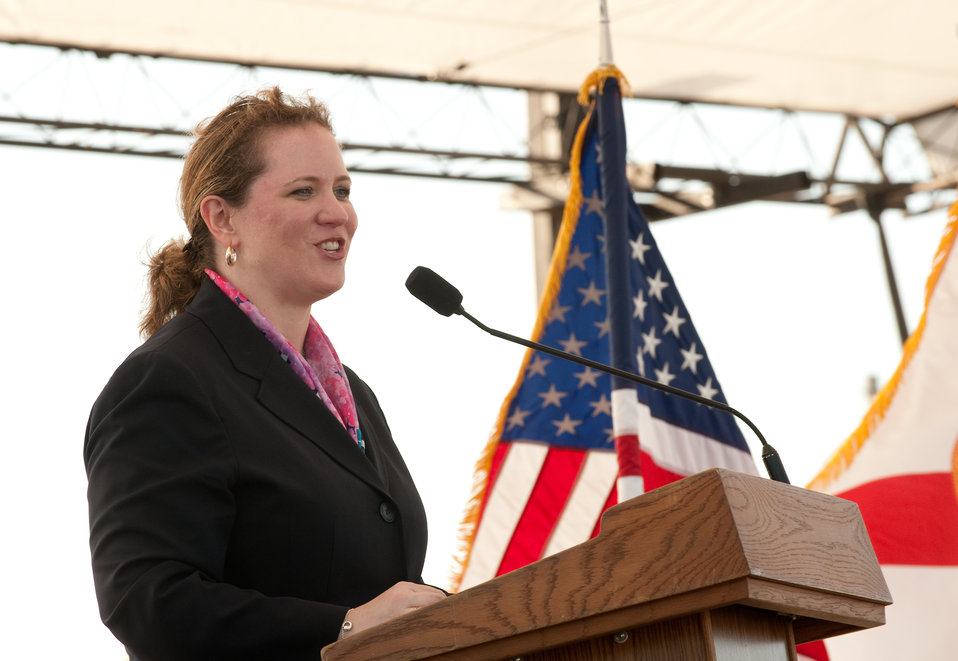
Air Force Week Cocoa Beach Launch

Undersecretary of the Air Force Erin C. Conaton addresses the audience in Cocoa Beach, Fla., Oct. 26, 2010, during the Proclamation Ceremony that formally launches Air Force Week Cocoa Beach. Air Force Week continues through Oct. 31.